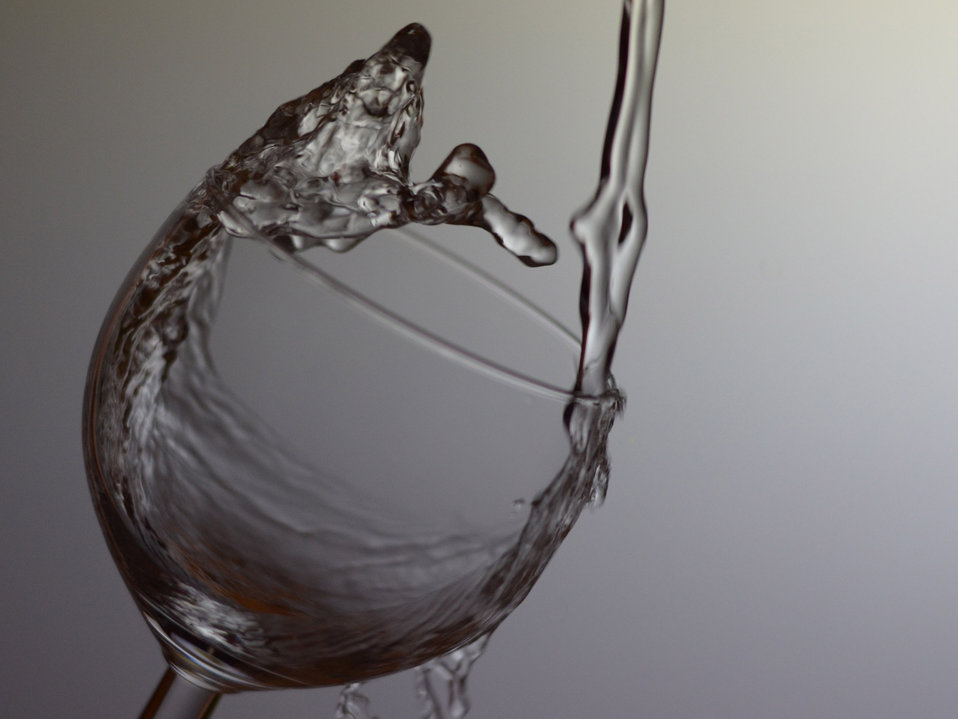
Experiment with a glass of water.